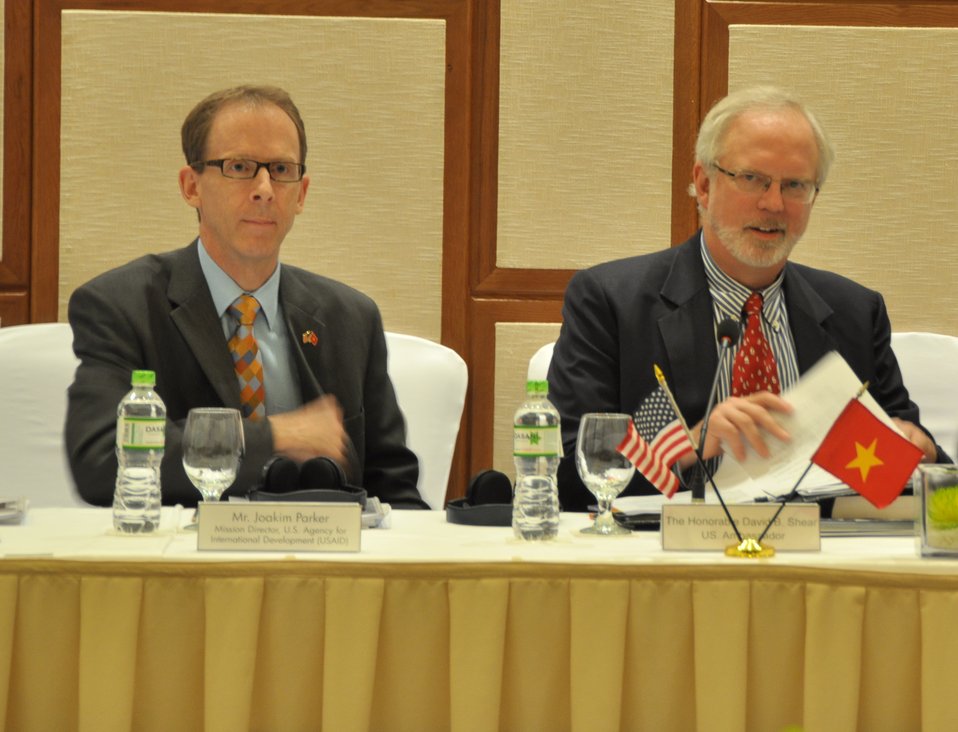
USAID Mission Director, Joakim Parker (left) and U.S. Ambassador David Shear (right)

Danang, December 4, 2013.